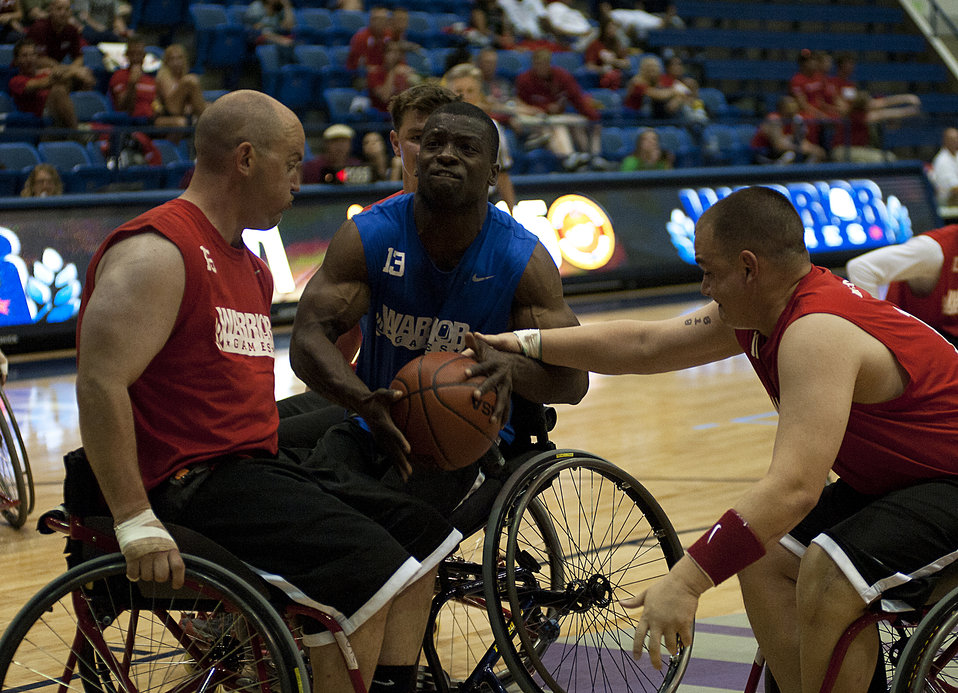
Warrior Games

Matt Sanders (center) is fouled by a member of the Marine Corps team during a wheelchair basketball game May 4, 2012, during Warrior Games at the U.S. Air Force Academy in Colorado Springs, Colo. The Air Force lost to the Marines by a score of 37-21, but won the bronze medal.